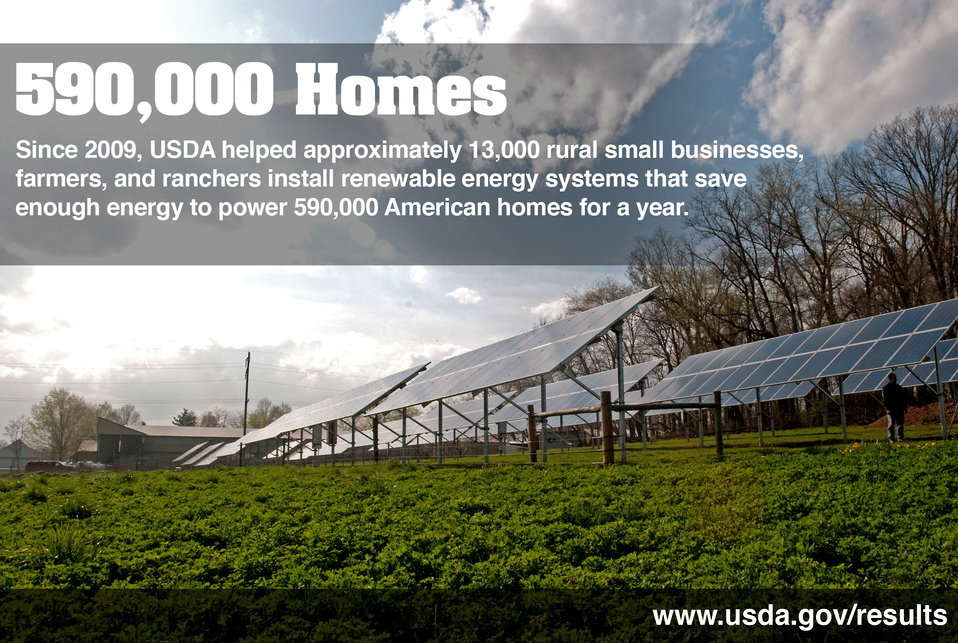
Print-Energy

Some of the 240 solar panels at Seldom Rest Farms located, north of Myerstown, PA, on Wednesday, April 20, 2011. The farm maintains a crop, herd of sheep and 17,000 hens. The Hens are kept in a two story chicken house and produce approximately 2.5 million chicks each year. To supplement their electrical needs, they chose a contractor who knew about U. S. Department of Agriculture (USDA) Rural Energy for America program (REAP) grants and helped them through the application process. The farm was awarded a $152,000 grant (25% of the cost) to install the 1001kW solar array to power their farm, a neighboring farm and homes on the local electrical grid. The 240 solar panels were ground mounted with 5-foot clearance underneath to allow sheep to graze and rest underneath protected from the rain, sun or snowfall. 10 converters change the DC electrical energy from the panels into AC energy that goes into the local power grid. Spring statistics show it is producing more than expected. REAP offers grants and/or loan guarantees for the purchase and installation of renewable energy generating systems and for energy efficiency improvements.